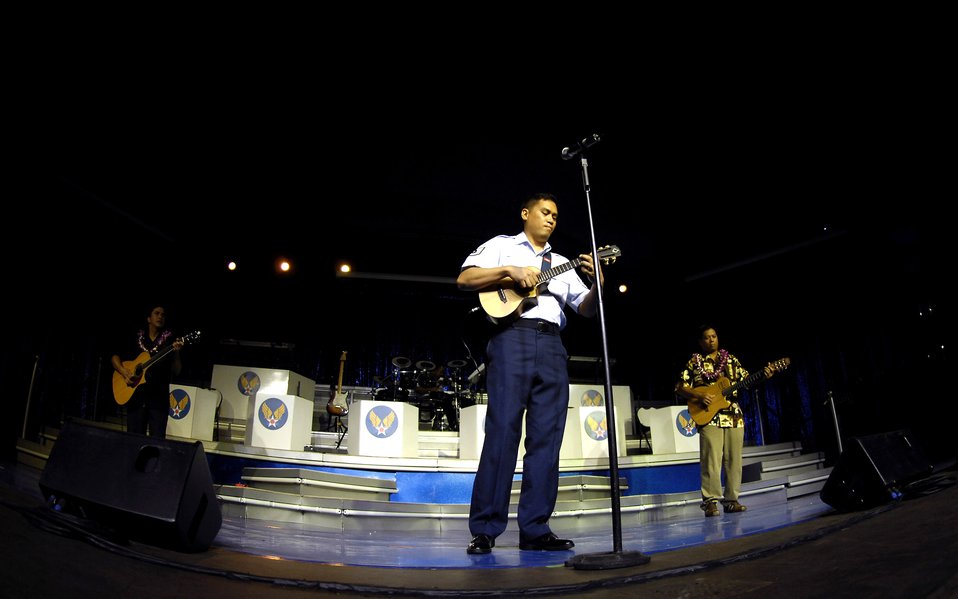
Uniquely ukulele: Airman plays from the heart

Tech. Sgt. Daniel Baduria plays his ukulele as the opening act for Tops In Blue Sept. 12 at the Waikiki Shell in Honolulu. Sergeant Baduria played as part of the Heritage to Horizons theme of the Air Force's 60th anniversary. His father, Donald Baduria, was an Airman with the Strolling Strings Trio in the Air Force's Tops In Blue entertainment showcase in the 1950s. Sergeant Baduria, who lost his father to cancer more than 20 years ago, honored his memory during the performance. Tops In Blue, the Air Force's signature entertainment group, gave a free performance for the public to celebrate Air Force Week Honolulu and the Air Force's 60th anniversary. Sergeant Baduria is an aircraft fuel systems specialist with the Hawaii Air National Guard's 154th Wing.